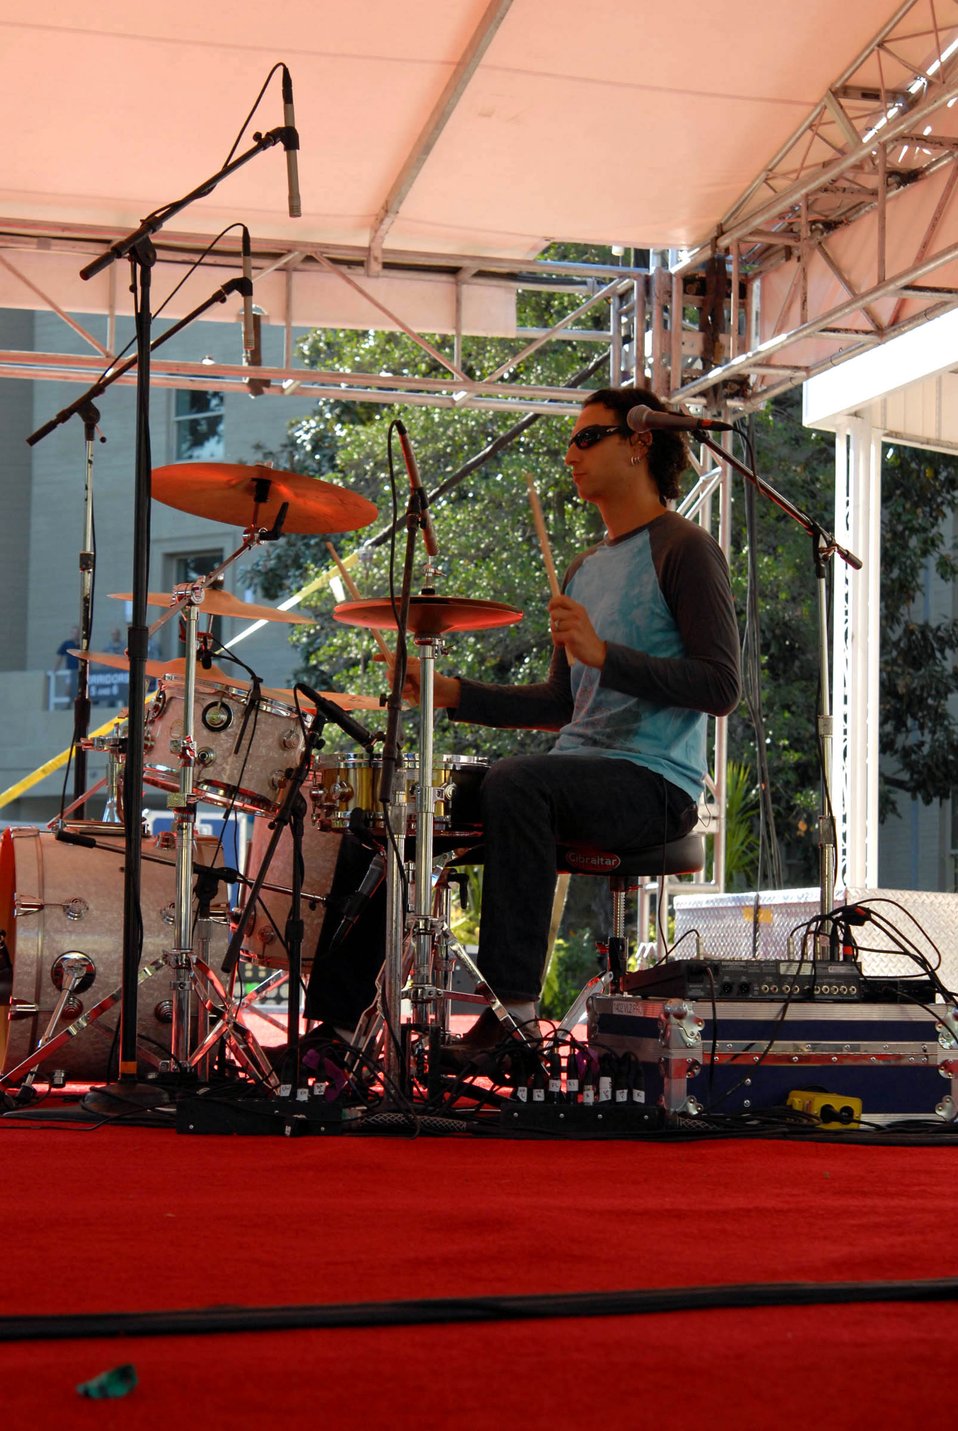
Band rocks Pentagon on Air Force's 60th birthday

Dan Fishman practices for a Air Force 60th birthday performance inside the Pentagon courtyard Sept. 17 in Arlington, Va. Mr. Fishman is a drummer for the rock band Five Star Iris. The band recently finished an Armed Forces Entertainment tour in Southwest Asia.